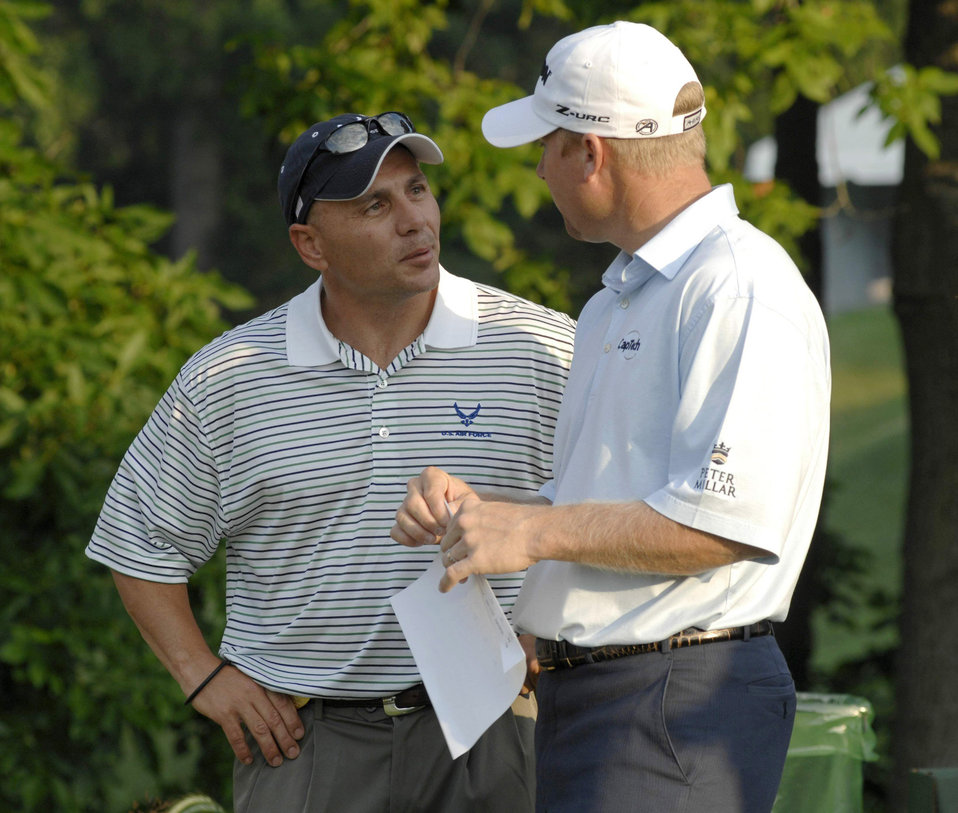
Andrews Airman participates in national golf tournament

Senior Master Sgt. Kirk Kessler (left) talks with pro golfer John Rollins during the 2nd Annual AT&T National Golf Tournament July 2 at the Congressional Country Club in Bethesda, Md. The Tiger Woods Foundation selected Sergeant Kessler to play in the tournament. Sergeant Kessler is assigned to the 316th Civil Engineer Squadron from Andrews Air Force Base, Md.